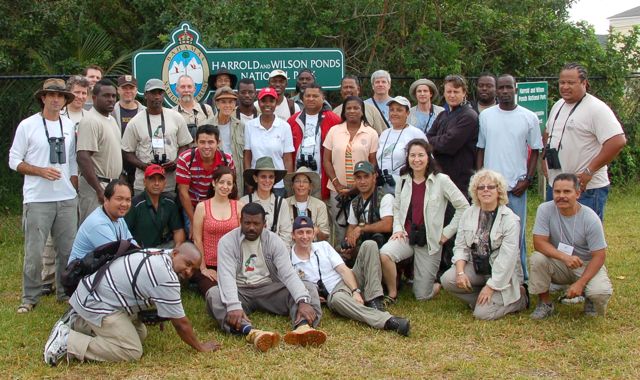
Participants at the SCSCB Bird Monitoring Training Workshop, February 19-23, 2009, Nassau, Bahamas Credit SCSCB

Participants at the SCSCB Bird Monitoring Training Workshop, February 19-23, 2009, Nassau, Bahamas.